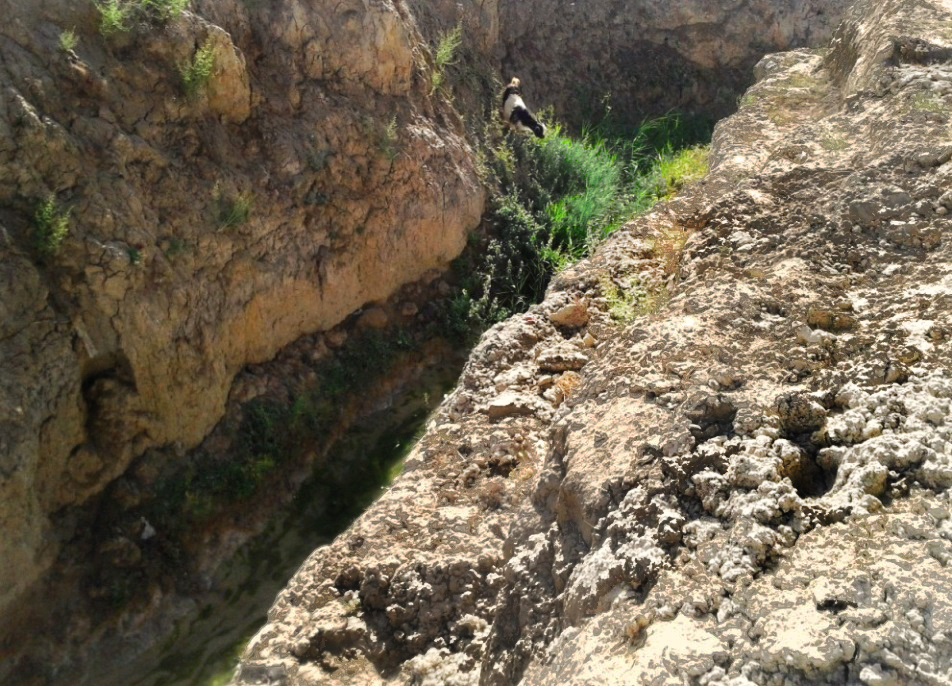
The 155m long karez in Abbas Qala was too deep and damaged to be repaired by local residents without a USAID grant - and more importantly, without unity and collaboration.